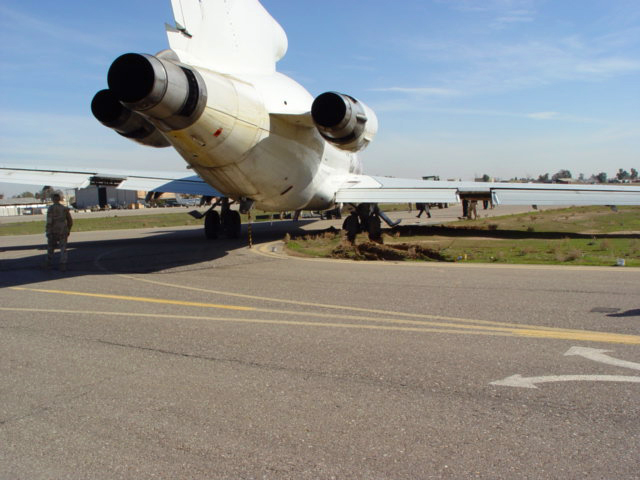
Stuck in the mud

KIRKUK AIR BASE, Iraq -- Airmen here survey a mail cargo plane that turned too soon and became mired in the mud. The aircraft was stuck between two taxiways while Airmen spent more than 40 hours removing it.